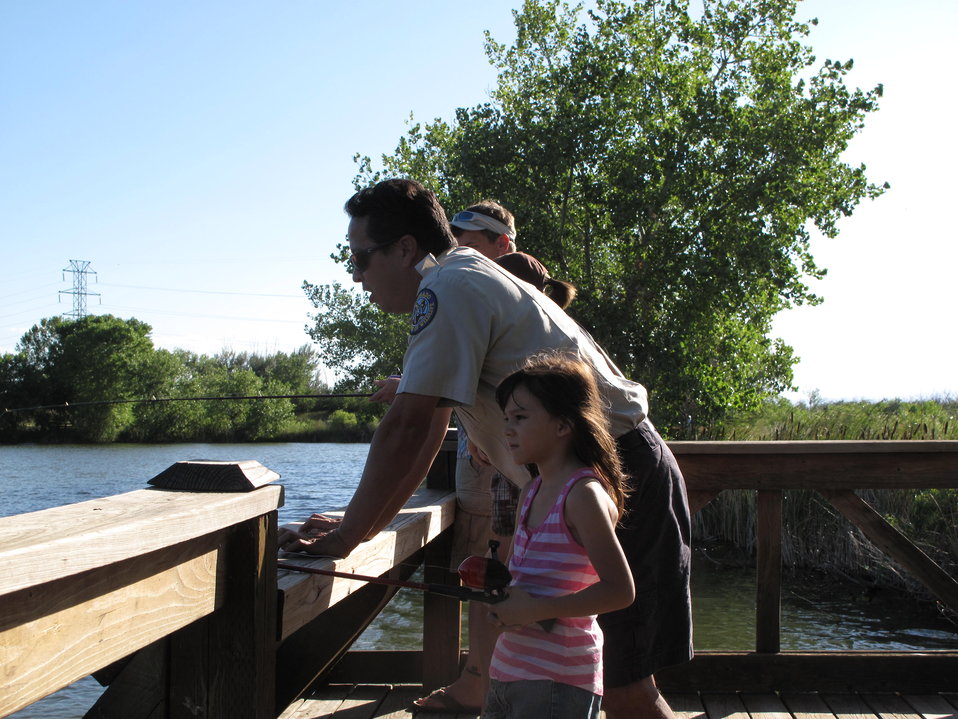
ELK fishing trip to RM Arsenal